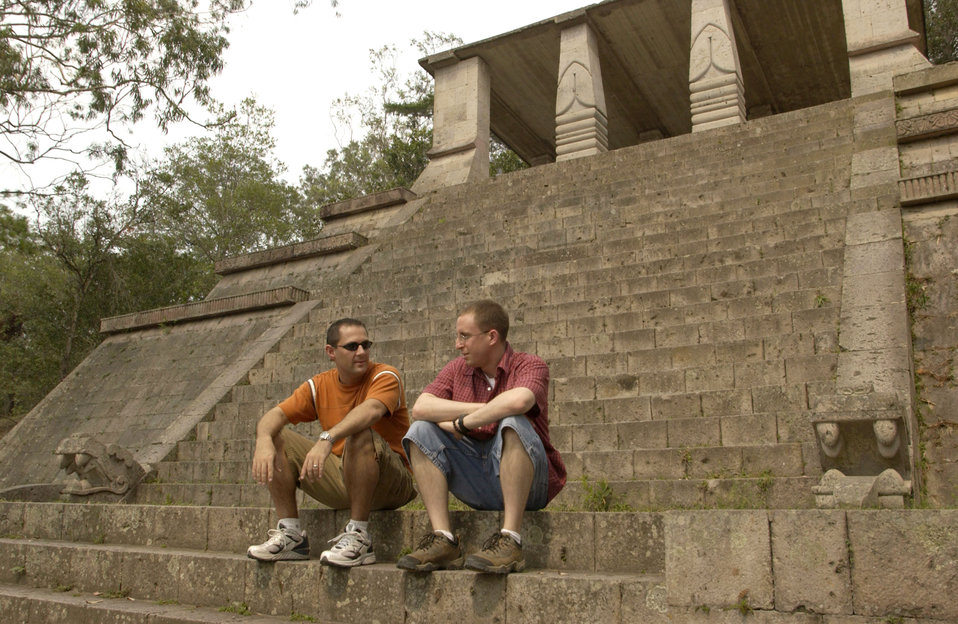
For U.S. troops, Tegucigalpa's good life has its dangers

TEGUCIGALPA, Honduras -- Capts. Dan Beard and Cliff Bayne (left to right) chat on the steps of a replica of a Copan Indians temple in United Nations Park, which overlooks the capital city. Both captains are logistics officers for Joint Task Force-Bravo at Soto Cano Air Base, Honduras, and like to visit sites around the country to soak up the local culture and eat the tasty local food.